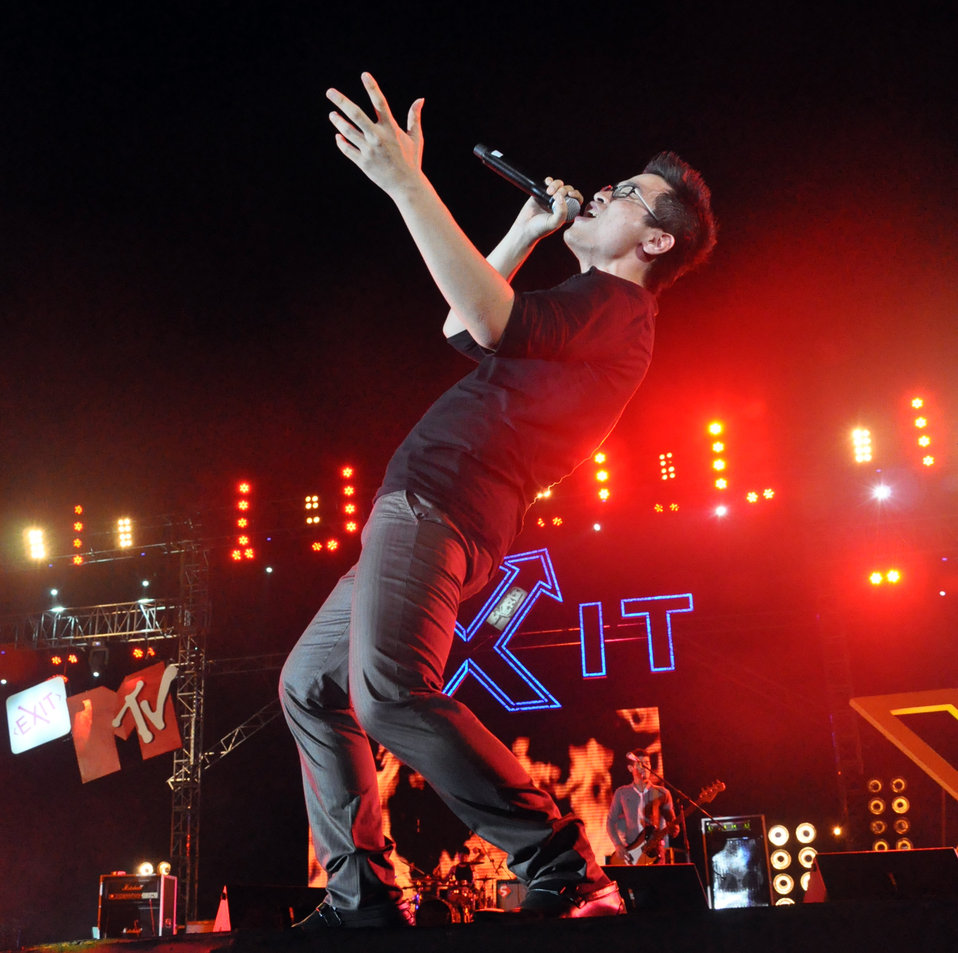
USAID MTV EXIT HCMC Concert

Concert in Ho Chi Minh City against human trafficking, April 17, 2010